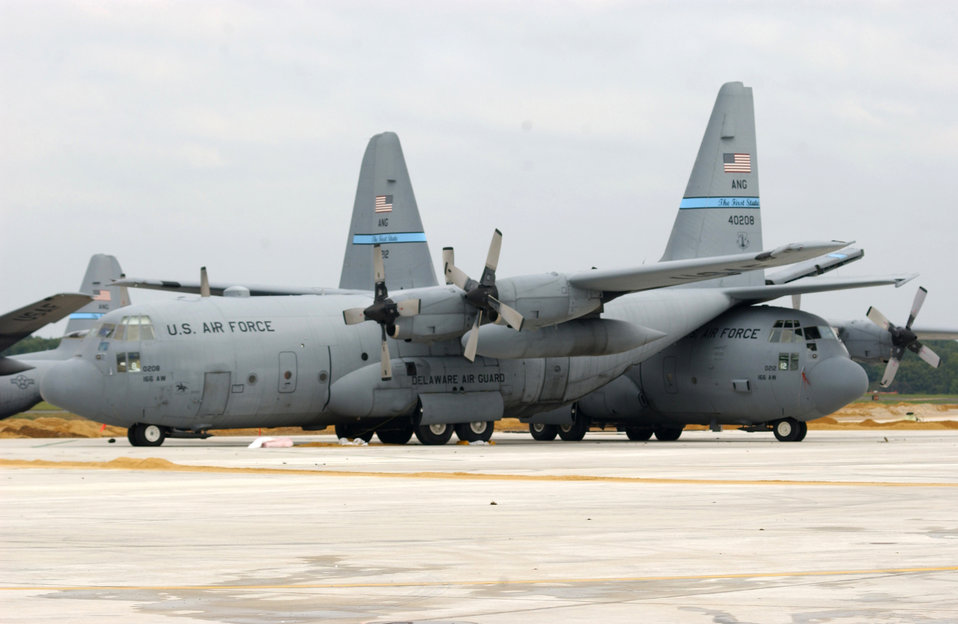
Fierce tornado

NEW CASTLE, Del. - A tornado caused two C-130 Hercules to collide into each other here Sept. 28. The aircraft are assigned to the Delaware Air National Guard's 166th Airlift Wing.